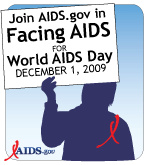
facing aids web badge white sign